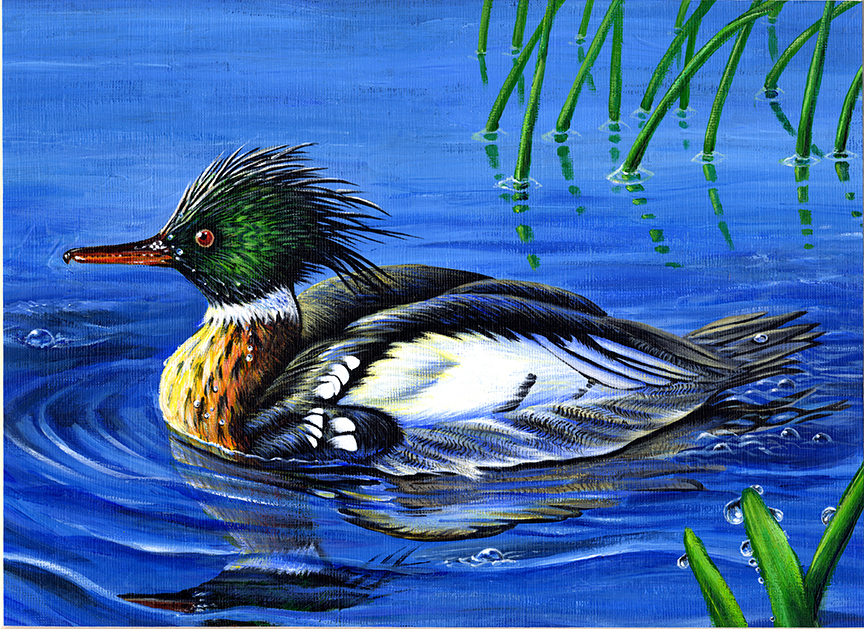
JRDuck2013AZ

2013 Junior Duck Stamp Best of Show-Arizona